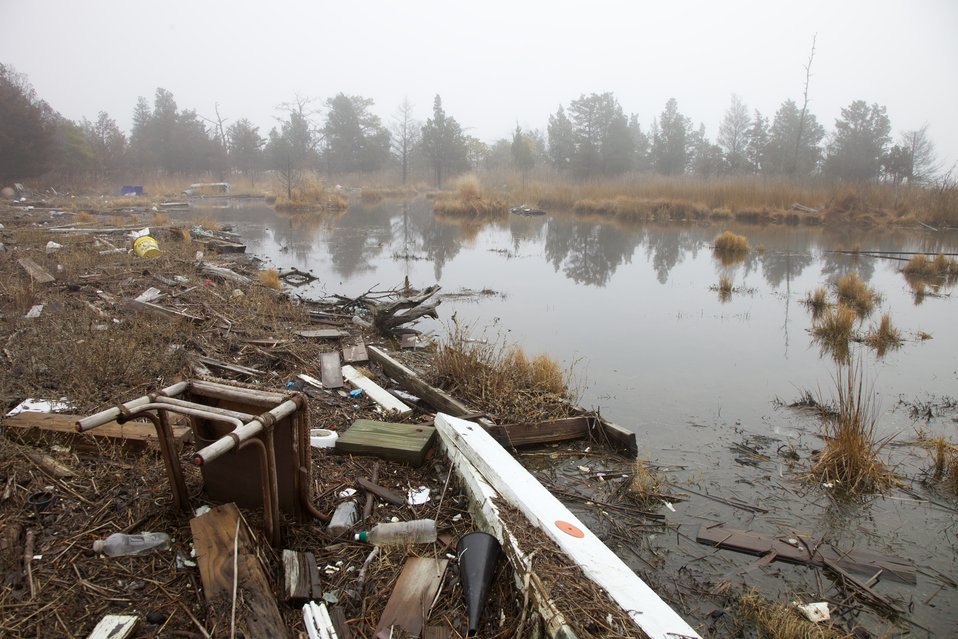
Forsythe NWR debris cleanup

Post-Sandy debris at E.B. Forsythe National Wildlife Refuge.